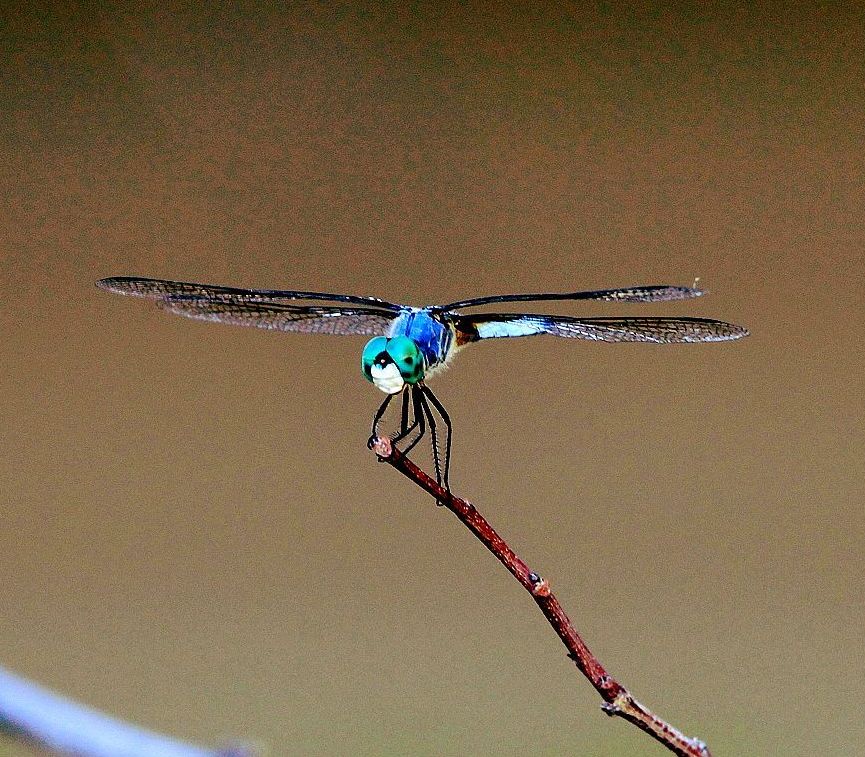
Blue Dasher dragonfly

Bitter Lake National Wildlife Refuge.